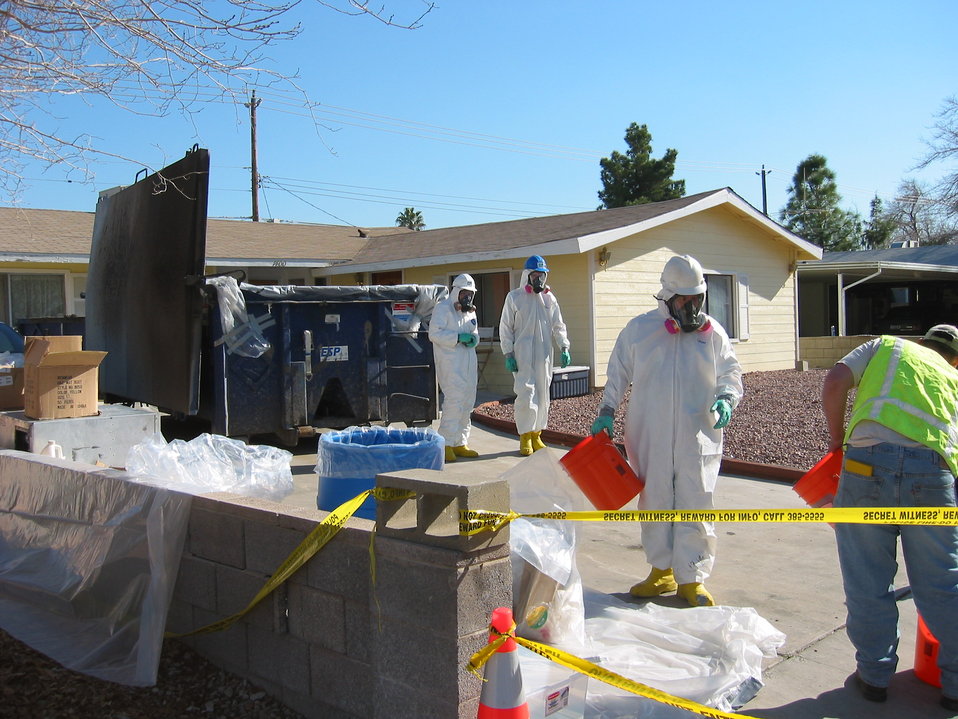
EPA workers clean up residential mercury spill

Workers suited up for mercury cleanup at a contaminated home in Nevada, where a teen spread mercury in his home and unwittingly poisoned himself.